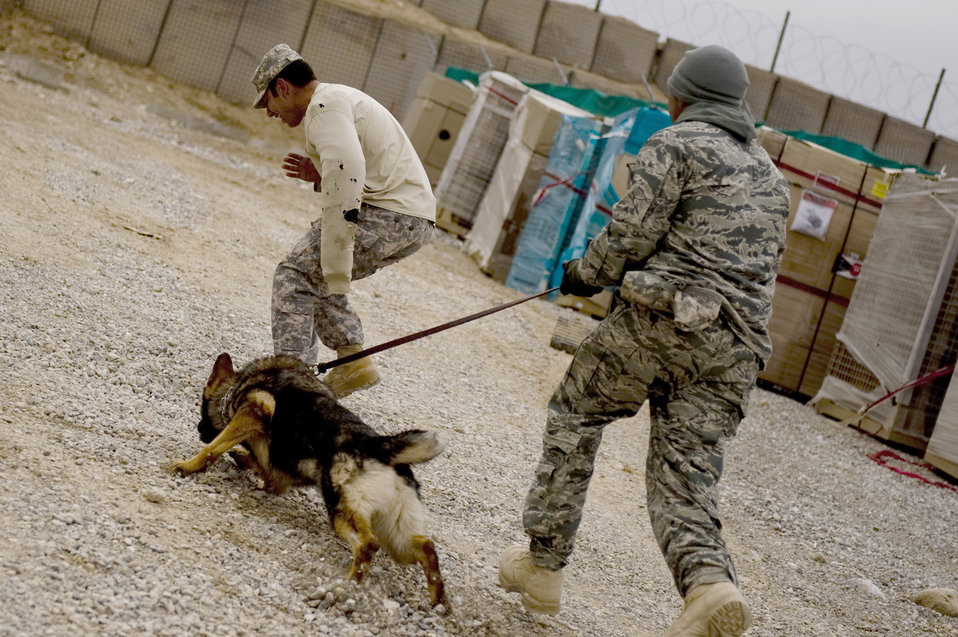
Combined Team Zabul

Staff Sgt. Pascual Gutierrez (right) and Edy, his military working/patrol explosive detection dog, conduct a challenge training session with Army Spc. Joseph Lopez Feb. 18, 2011, at Forward Operating Base Lagman, Afghanistan. Sergeant Gutierrez, Edy and Specialist Lopez are part of Combined Team Zabul, which is made up of dogs and dog handlers from the Air Force, Army and Navy who help support the various units at Forward Operating Base Lagman during patrols and other missions.